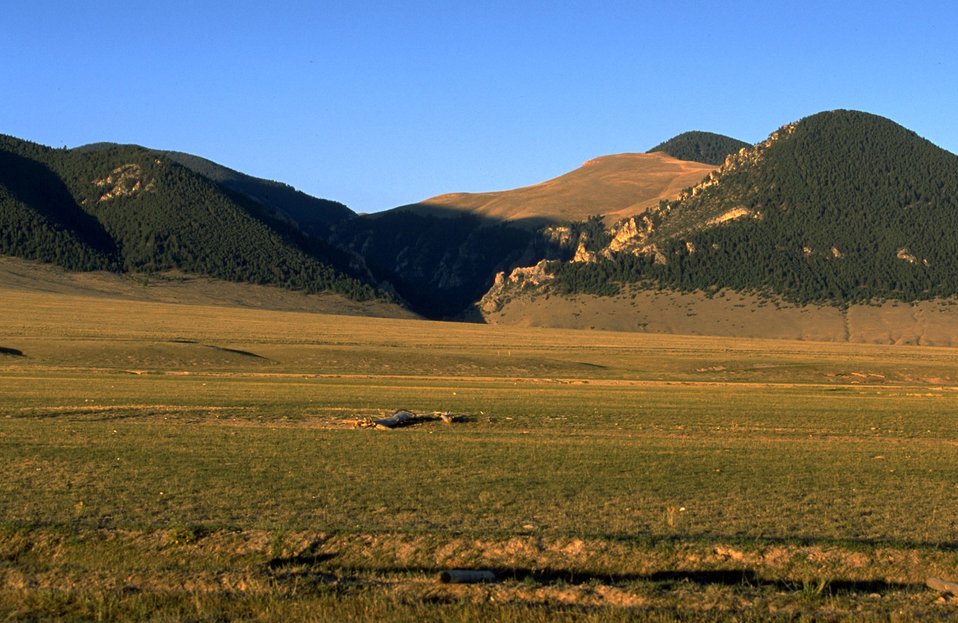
Grassy slope leading to forested mountains